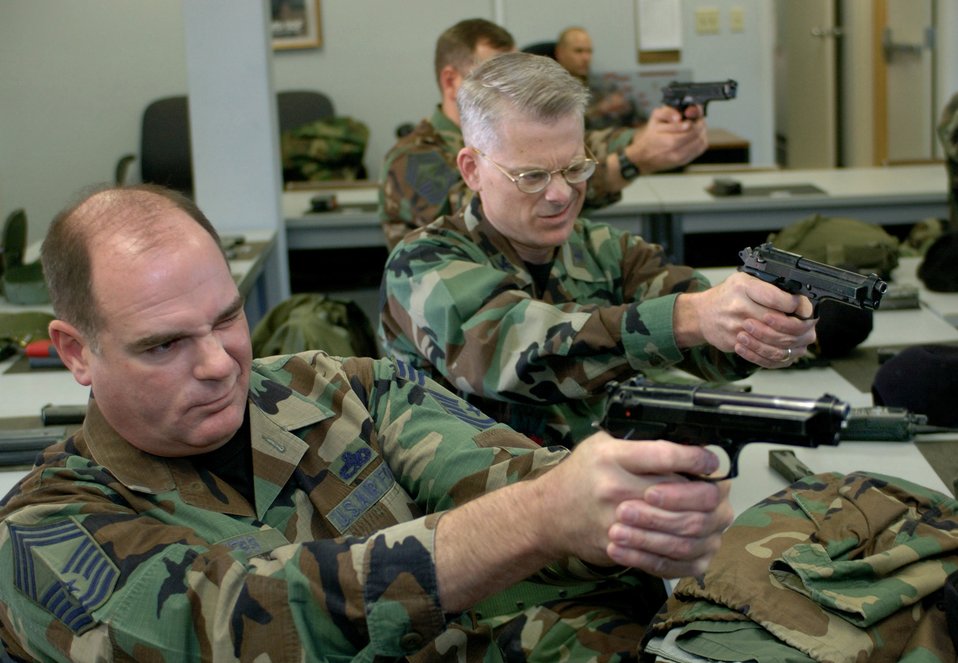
Shootout

LANGLEY AIR FORCE BASE, Va. (AFPN) -- Chief Master Sgt. Dennis Krebs and Colonel Roy Lanier III check the sights of their 9MM pistols before the Chiefs and Eagles Shootout here.